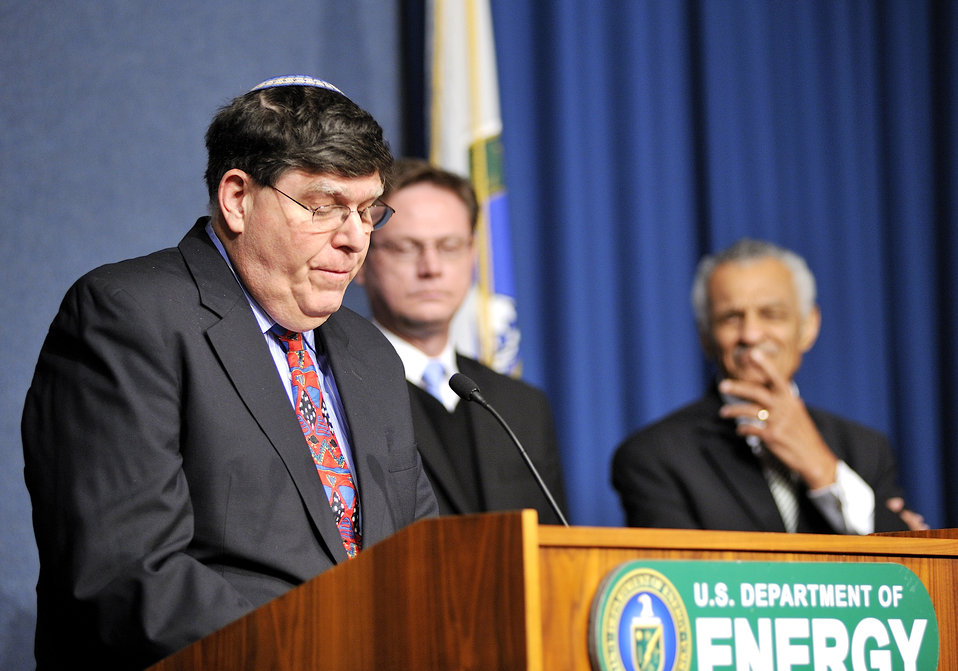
Rabbi Charles Feinberg speaks at the Martin Luther King Jr. Day Celebration at DOE headquarters.